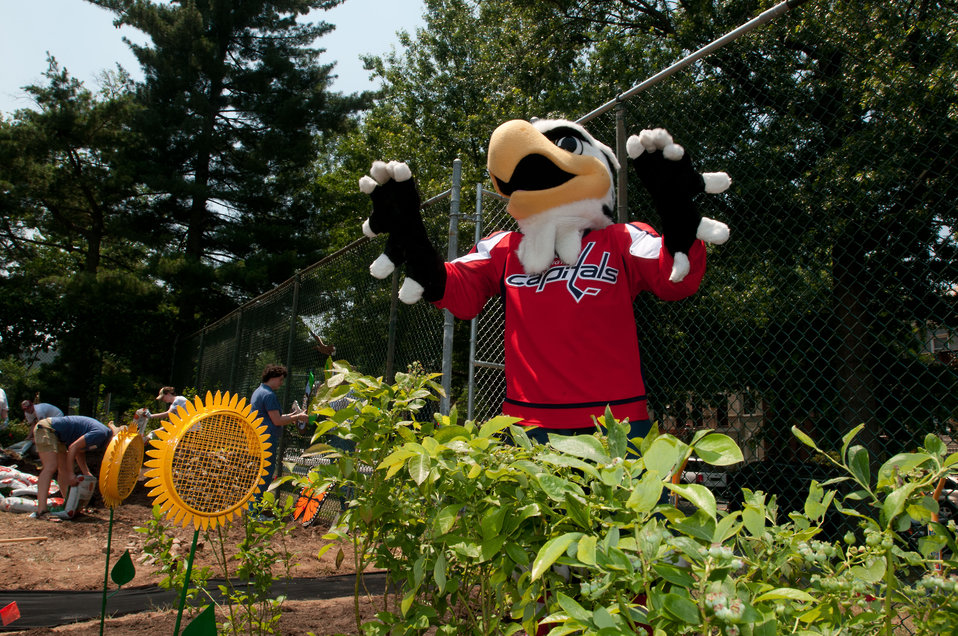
Washington Capitals’ mascot Slapshot flapped his wings after smelling the flowers and enjoying the yellow bird feeders in the newly created bird habitat garden in the People’s Garden, at William B. Powell Elementary School on Thursday, June 9, 2011 in Washington, DC.
Volunteers from U.S. Department of Agriculture People’s Garden Executive Master Gardener program and Washington Capitals hockey organization, along with defenseman Jeff Schultz, and mascot Slapshot transformed a grassy corner of the school playground into a habitat garden and outdoor learning area. Executive Master Gardeners led the volunteer project teams. The Washington Capitals donated new tools; tool shed; garden materials; lunch; most of the volunteers and more. The completed projects included a walking path; tiling of garden plots; planting a bird habitat garden, pollinator garden and native grasses; caterpillar and butterfly plaques; hummingbird and bat house, and tool shed. The garden will later include a picnic area, outdoor classroom, hummingbird garden, Monarch watch garden, native bee garden, and birdbath. USDA challenges its employees to establish People's Gardens at USDA facilities worldwide or on this case, help communities create gardens. People's Gardens vary in size and type, but all have a common purpose - to help the community and the environment.